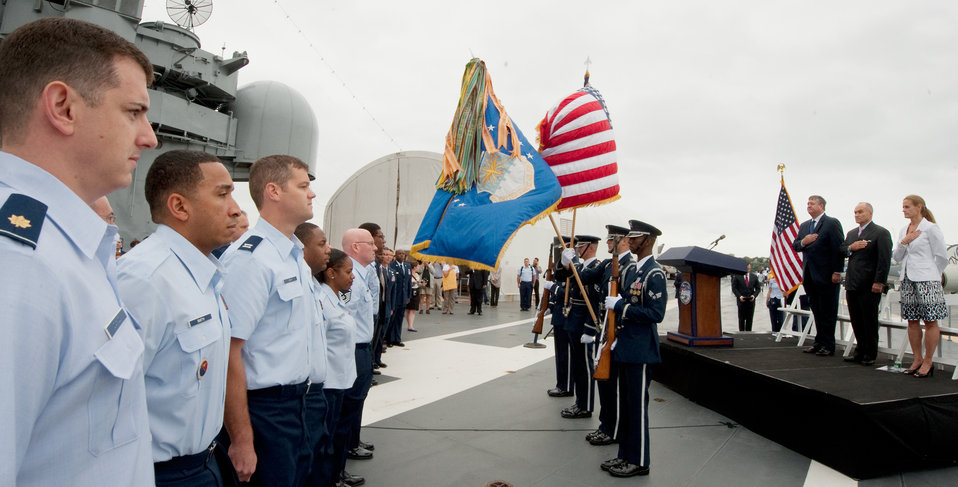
Air Force Week New York City Proclamation Ceremony

The colors are presented while the national anthemis played during the Air Force Week New York City proclamation ceremony at the USS Intrepid on Aug. 24, 2010. The event at the Intrepid Sea, Air & Space Museum was highlighted by a six-ship flyover by the USAF Thunderbirds. The Honorable Michael Donley, Secretary of the Air Force attended, along with General Raymond Johns, Commander of Air Mobility Command. The Police Commissioner of the City of New York, the Honorable Raymond Kelly, represented NYC. Mr. Greg Kelly of